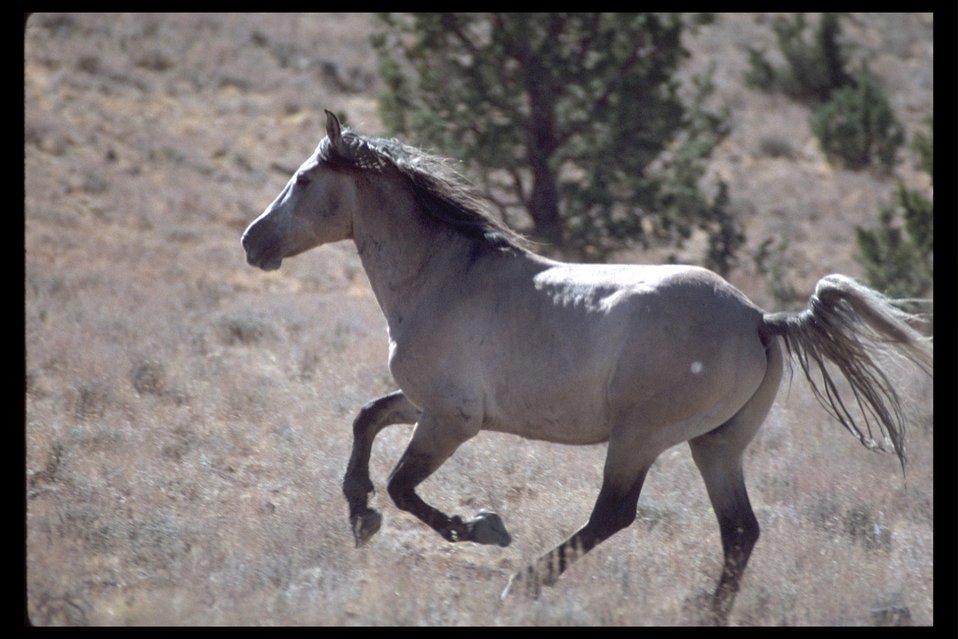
Kiger mustang stallion "Buttermilk," grulla color, in the Kiger HMA.